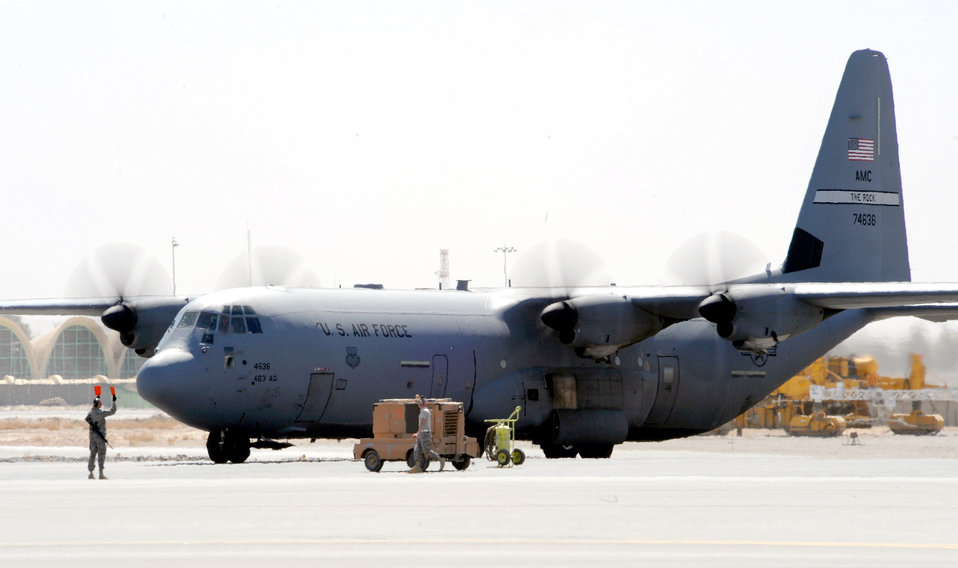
New Kandahar unit prepares for troop increase

A C-130J Hercules assigned to the activated 772nd Expeditionary Airlift Squadron arrives March 14 at Kandahar Airfield, Afghanistan. The new airlift squadron has been set up at Kandahar Airfield to assist with the increase of U.S. troops to the region.